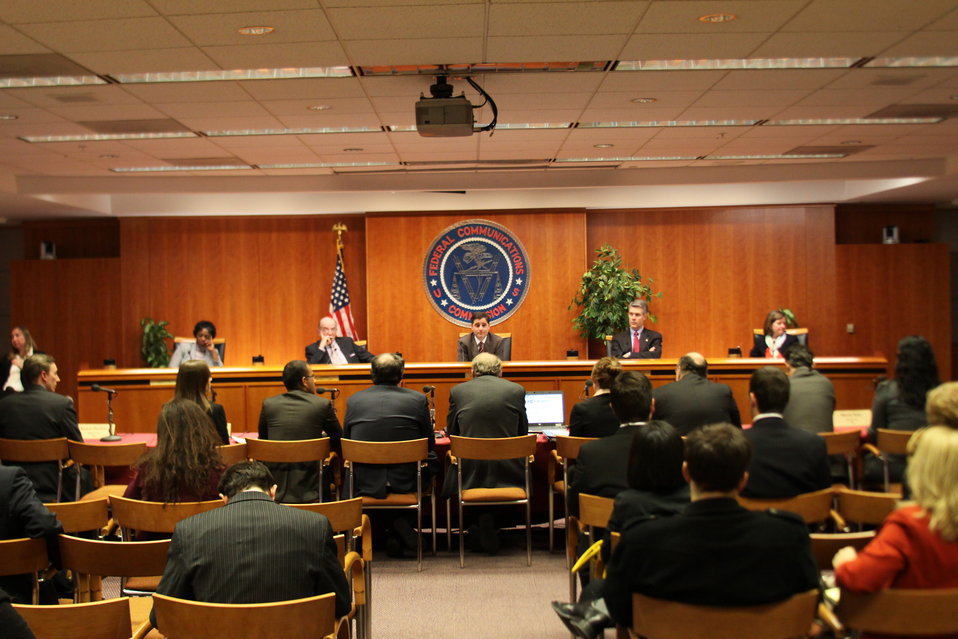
Open Commission Meeting - 2/18/2010

The Federal Communications Commission will hold an Open Meeting in Washington, DC. on February 18, 2010, which will include the following items:

E-Rate: An Order and Notice of Proposed Rulemaking to enable schools that receive funding from the E-Rate program to allow members of the general public to use the schools' Internet access during non-operating hours at no additional cost to the Universal Service Fund. This order and notice do not permit or require any changes to E-Rate applications due on February 11, 2010; Ex Parte Reform: A Notice of Proposed Rulemaking to improve the transparency and effectiveness of the FCC's decision-making process by reforming the ex parte rules; Procedural Reform: A Notice of Proposed Rulemaking to enhance the efficiency, openness, and transparency of the Commission's proceedings by improving and modernizing certain organizational and procedural rules; National Broadband Plan Status Report: Commission staff will report on the status of the National Broadband Plan, providing a framework for the national purposes portion of the Plan.